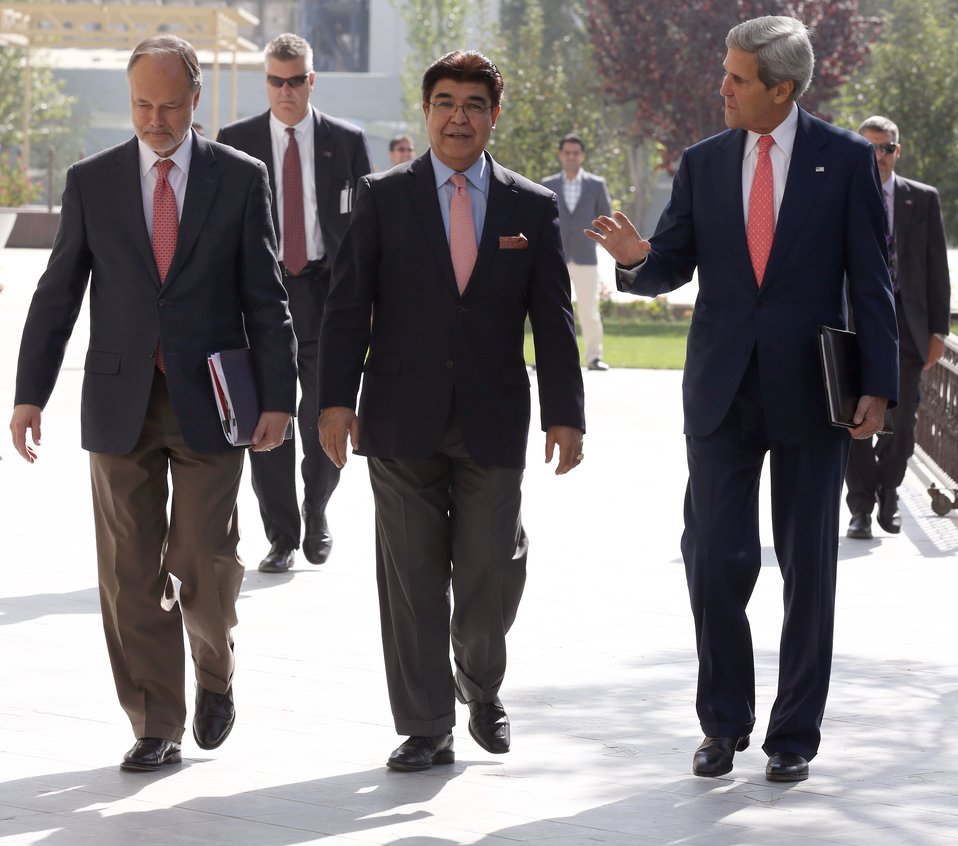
Secretary Kerry Meets With Afghan President

U.S. Ambassador to Afghanistan James B. Cunningham, left, Hamid Sidiq, Acting Director General of Protocol for the Afghan Foreign Ministry and U.S. Secretary of State John Kerry, right, walk to the Presidential Palace to meet with Afghan President Hamid Karzai on Saturday, October 12, 2013 in Kabul.